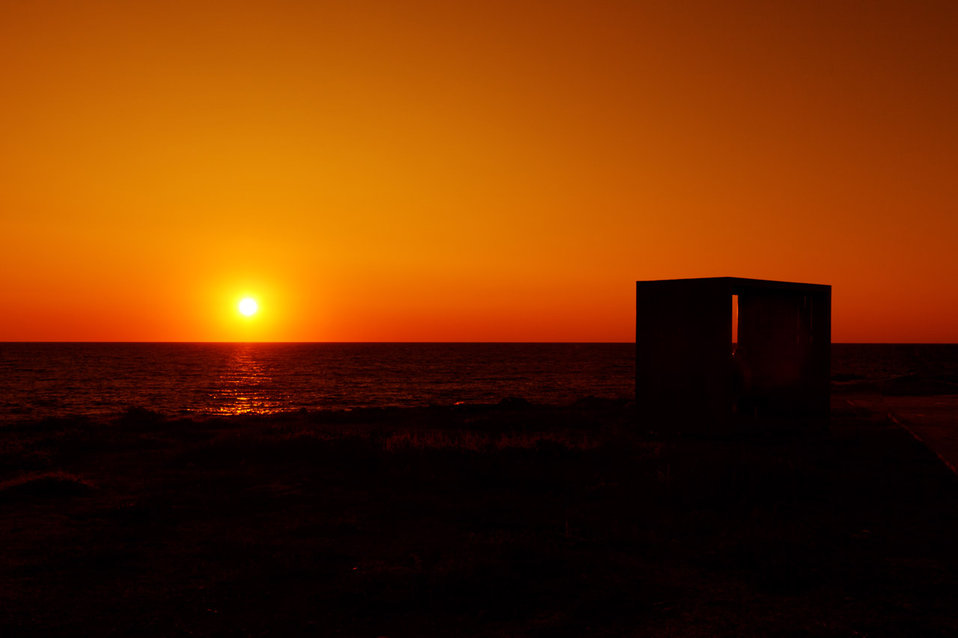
Orange sunset at seaside with silhouette of a bench.